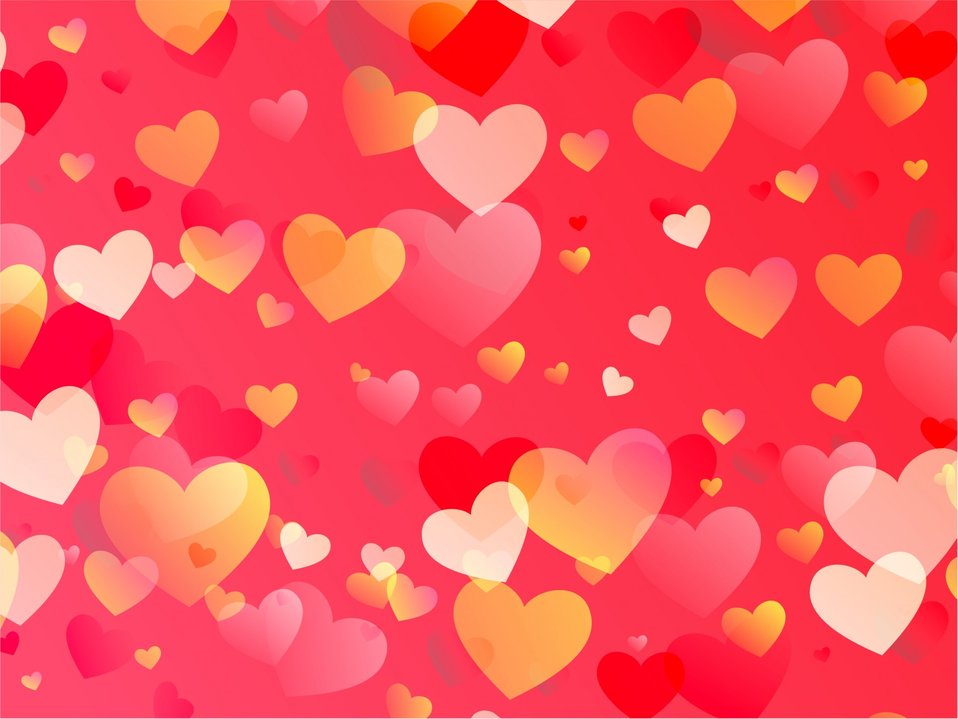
Pink love heart pattern

Pretty pink love hearts shaped background design..